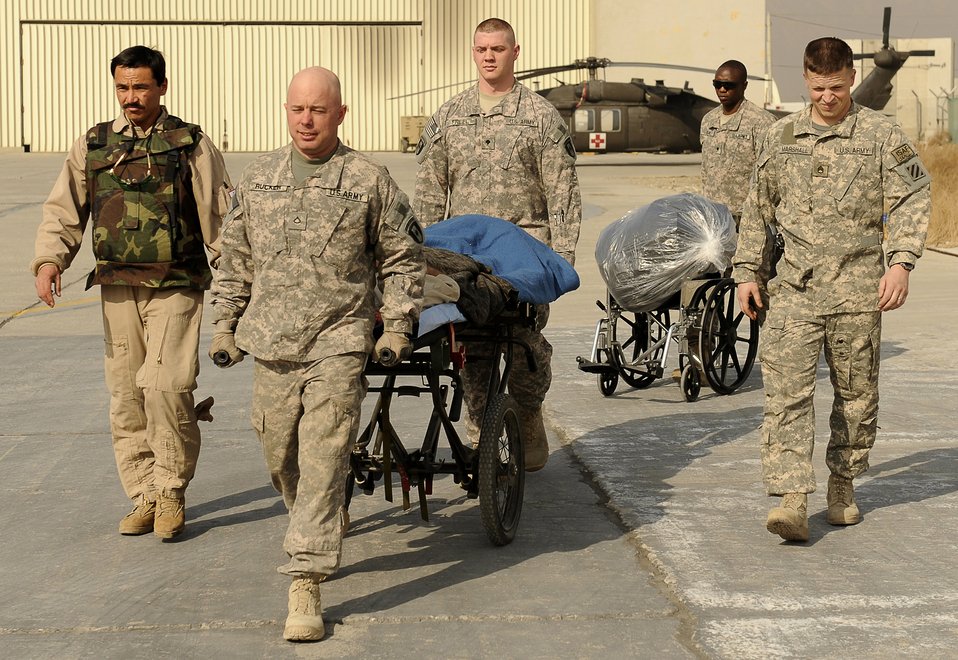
Soldiers and an Afghan airman escort an Afghan soldier on a medical evacuation

U.S. Army Soldiers from the 36th Air Support Medical Company, and Afghanistan National Army Air Corp Sgt. 1st Class Ghulam Sakhi (left), escort an Afghan soldier on a medical evacuation Feb. 3, 2010, at Bagram Airfield, Afghanistan. Sergeant Sakhi is a flight medic with the 438th Air Expeditionary Advisory Group/Combined Air Power Transition Force.